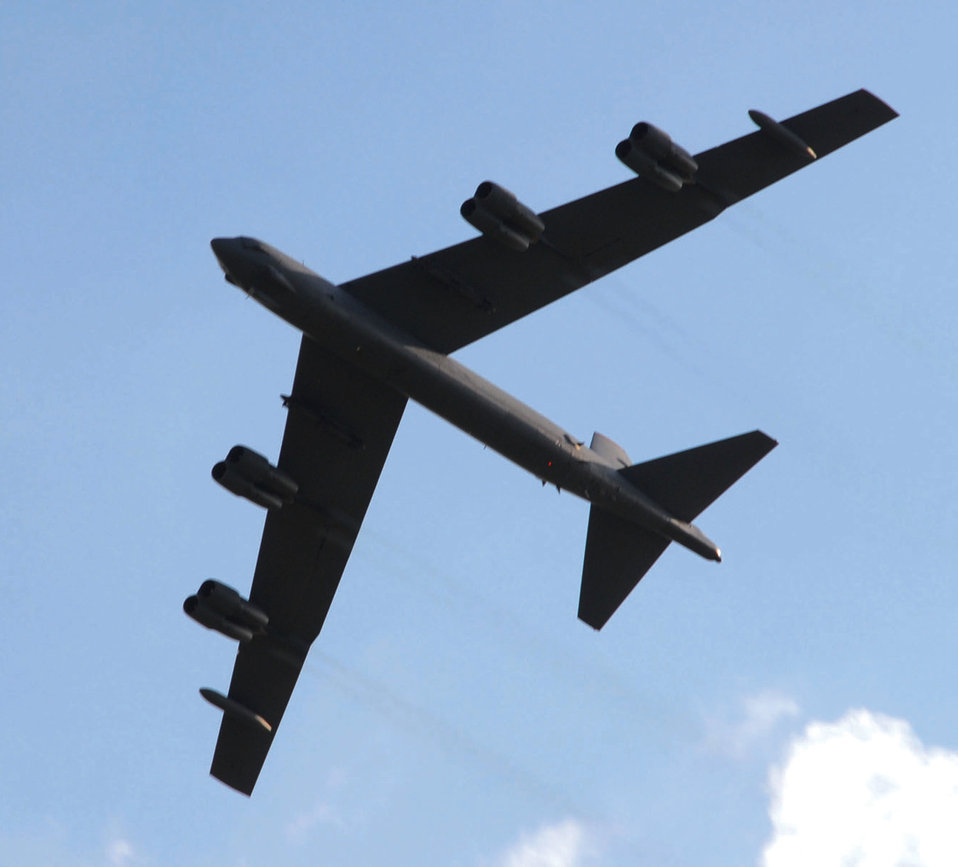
National Security Forum

During the National Security Forum at Maxwell Air Force Base, Ala., a B-52 Stratofortress conducts a fly-over May 20 for attendees of the 2009 forum. After the B-52 came fly-overs by a B-1 Lancer and a B-2 Spirit.